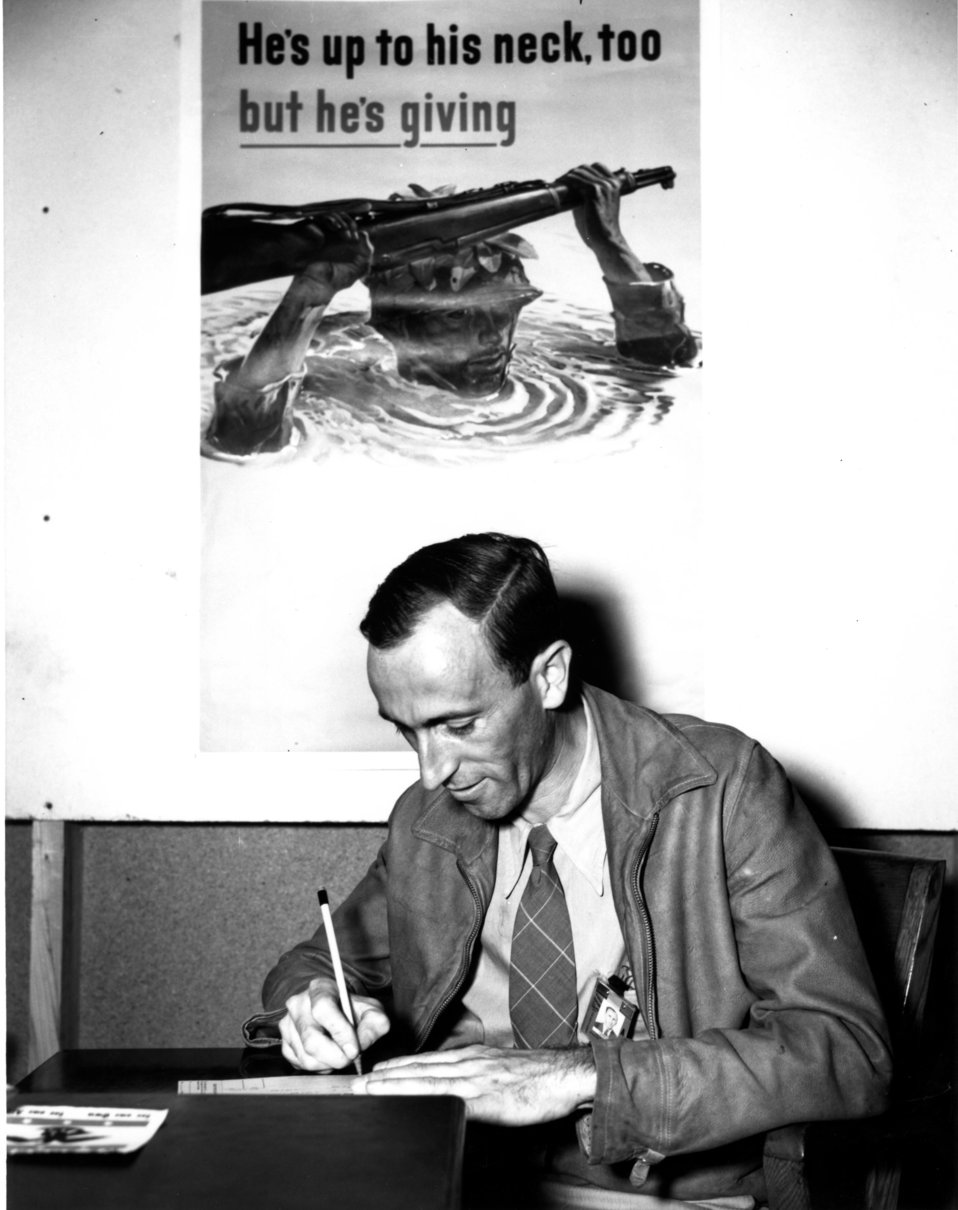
Daily Life at Oak Ridge